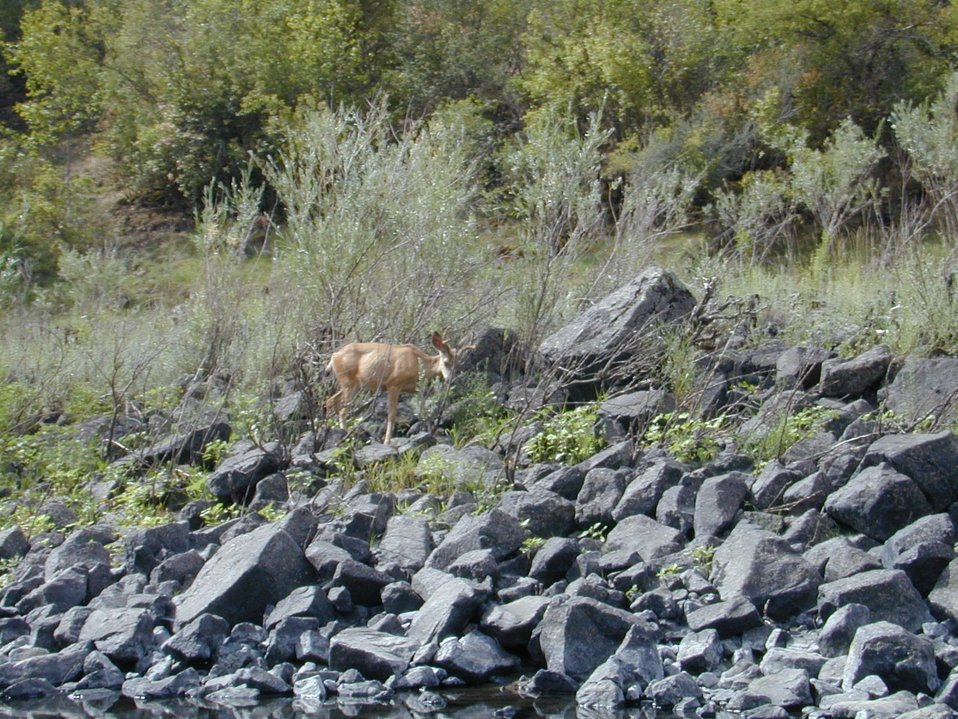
Hexagonal Basalt along the Lower Salmon River Cottonwood Field Office UCSC Upper Columbia Salmon Clearwater District